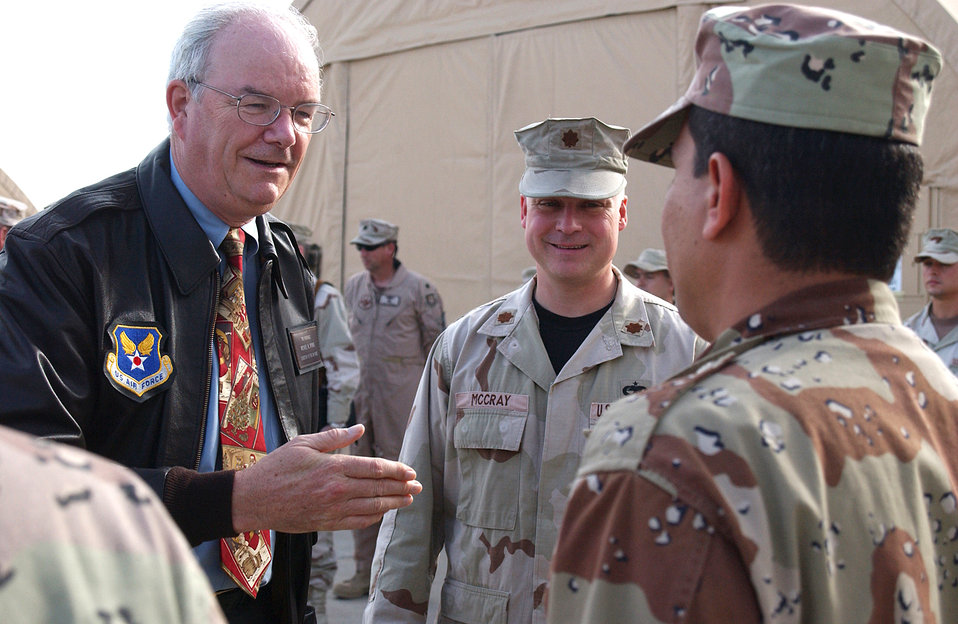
SECAF visits deployed Airmen, shares insight

ALI BASE, Iraq -- Secretary of the Air Force Michael W. Wynne congratulates an Airman assigned to Iraqi air force Squadron 23 (Transport) on the accomplishments of the squadron over the past year as. Maj. Gerald McCray, 777th Expeditionary Airlift Squadron's advisory support team maintenance commander, joined the secretary during his visit here.